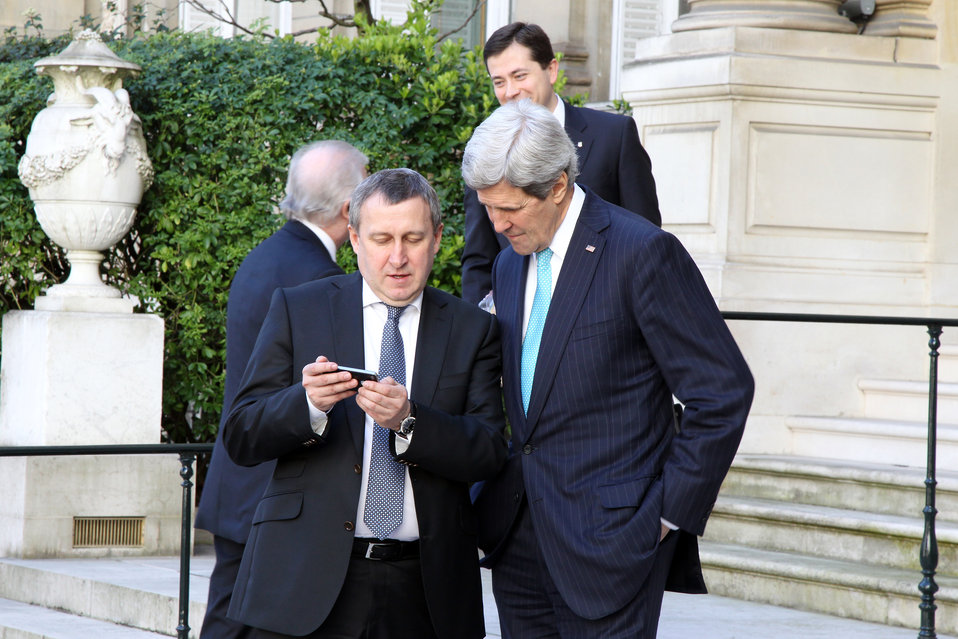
Secretary Kerry and Ukrainian Foreign Minister Deshchytsia Look at the Foreign Minister's Cell Phone

U.S. Secretary of State John Kerry and Ukrainian Foreign Minister Andrii Deshchytsia look at the Foreign Minister's cell phone after the Budapest Memorandum Ministerial in Paris, France, on March 5, 2014.